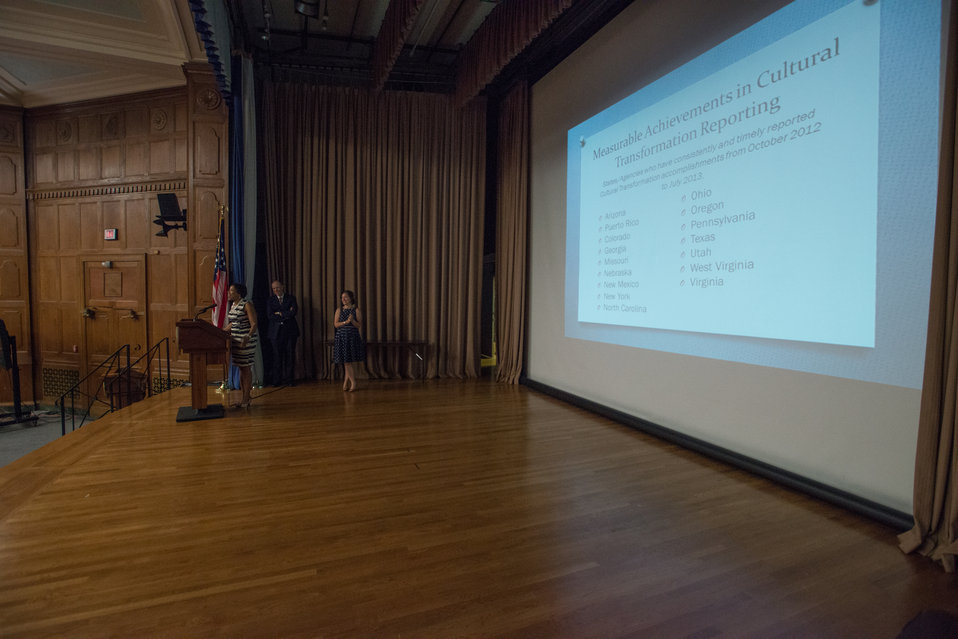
Cynthia Gibbs leads the forum on Intergenerational Communication during the U.S. Department of Agriculture’s (USDA) Rural Development (RD) 2nd Annual Cultural Transformation kickoff opening ceremony and forums, themed “Employees Influencing Change,” on Tuesday, Aug. 13, 2013 USDA in Washington, D.C.